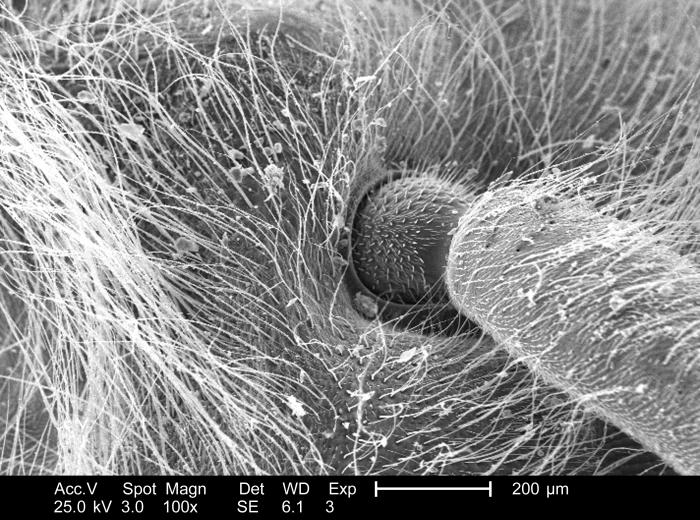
At a magnification of 100x, this scanning electron micrograph (SEM) revealed some of the morphologic details associated with the ball-and-socket type joint joining the proximal antennal segment with this unidentified insect's head. Usually made up of three primary segments, the proximal-most, or first segment of the antenna is known as the 'scape', and the second segment is known as the 'pedicle', and the third, or distal-most segment, is known as the 'flagellum'. It is the scape that is seen here attached to the insect's head.